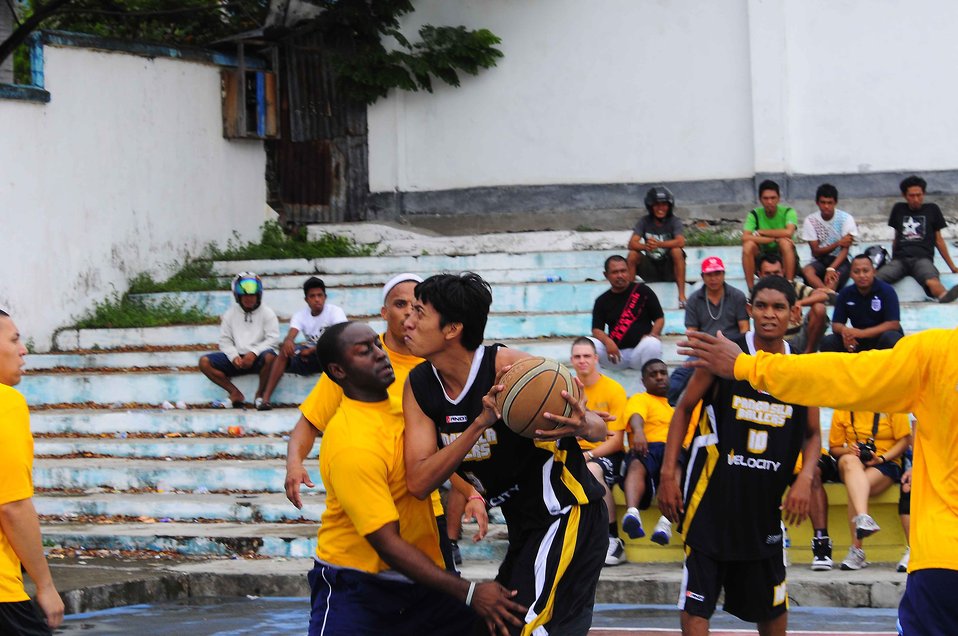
An Indonesian player from Pangasila Ballers goes up for a shot while being defended by several crewmembers assigned to the Military Sealift Command hospital ship USNS Mercy (T-AH 19) during a community service event in Ternate, Indonesia, on July 21, 2010. Pacific Partnership 2010 is the fifth in a series of annual U.S. Pacific Fleet endeavors conducted in Indonesia as a disaster relief exercise aimed at strengthening regional relationships with host and partner nations in Southeast Asia and Oceania.